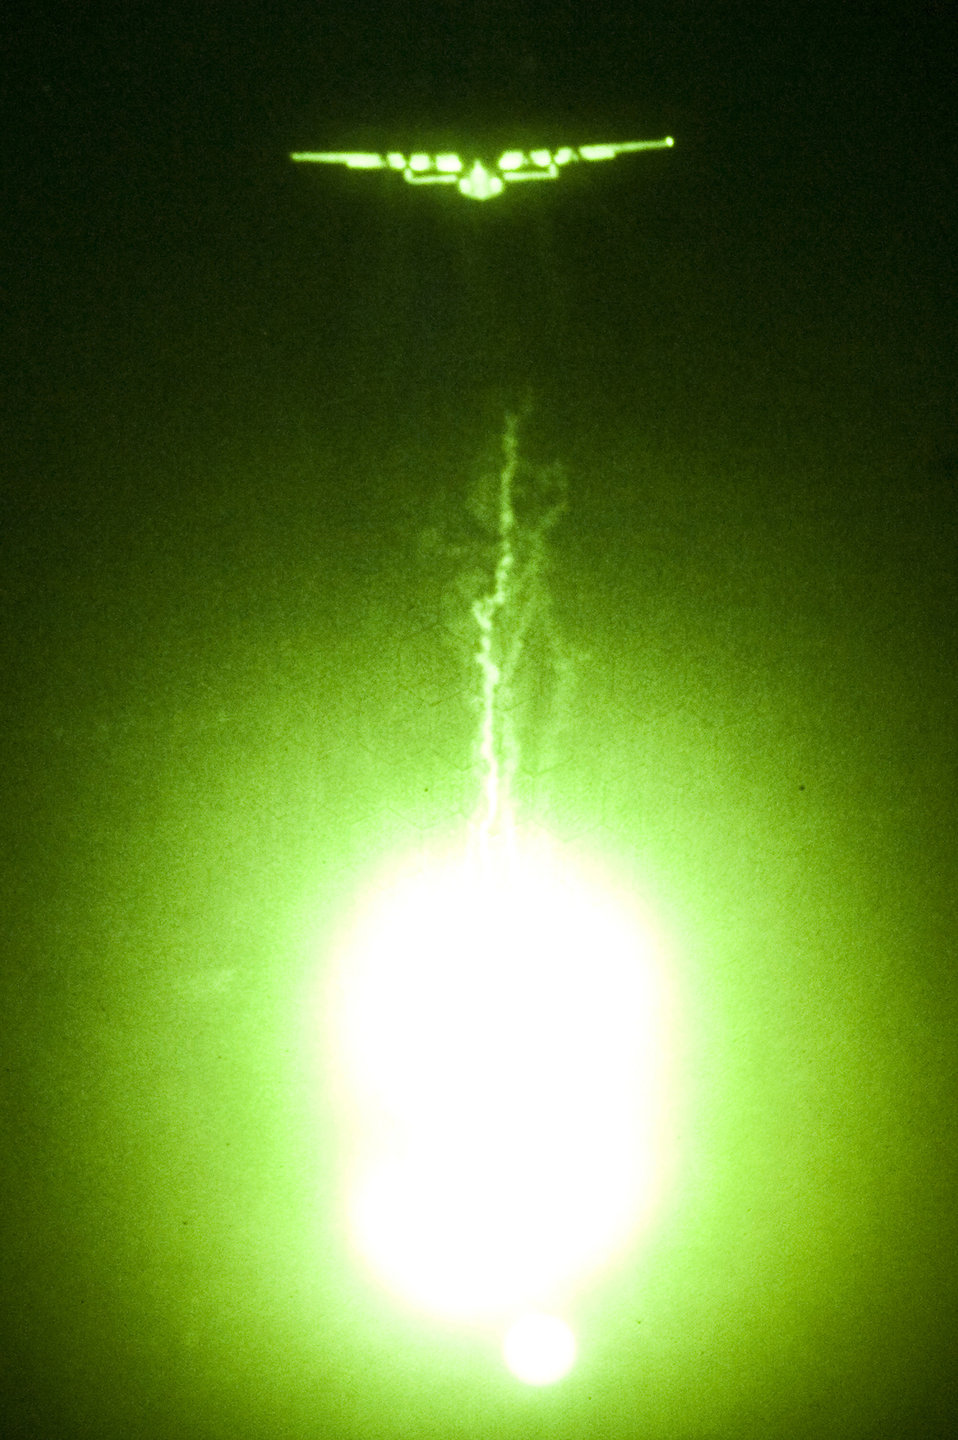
Night light

A C-17 Globemaster III performs evasive counter measures by launching flares during a Mobility Air Forces Exercise Nov. 16, 2011, over the Nevada Test and Training Range. The U.S. Air Force Weapons School holds MAFEX twice a year to test the ability of C-17 Globemaster and C-130 Hercules aircrews from Air Force bases around the